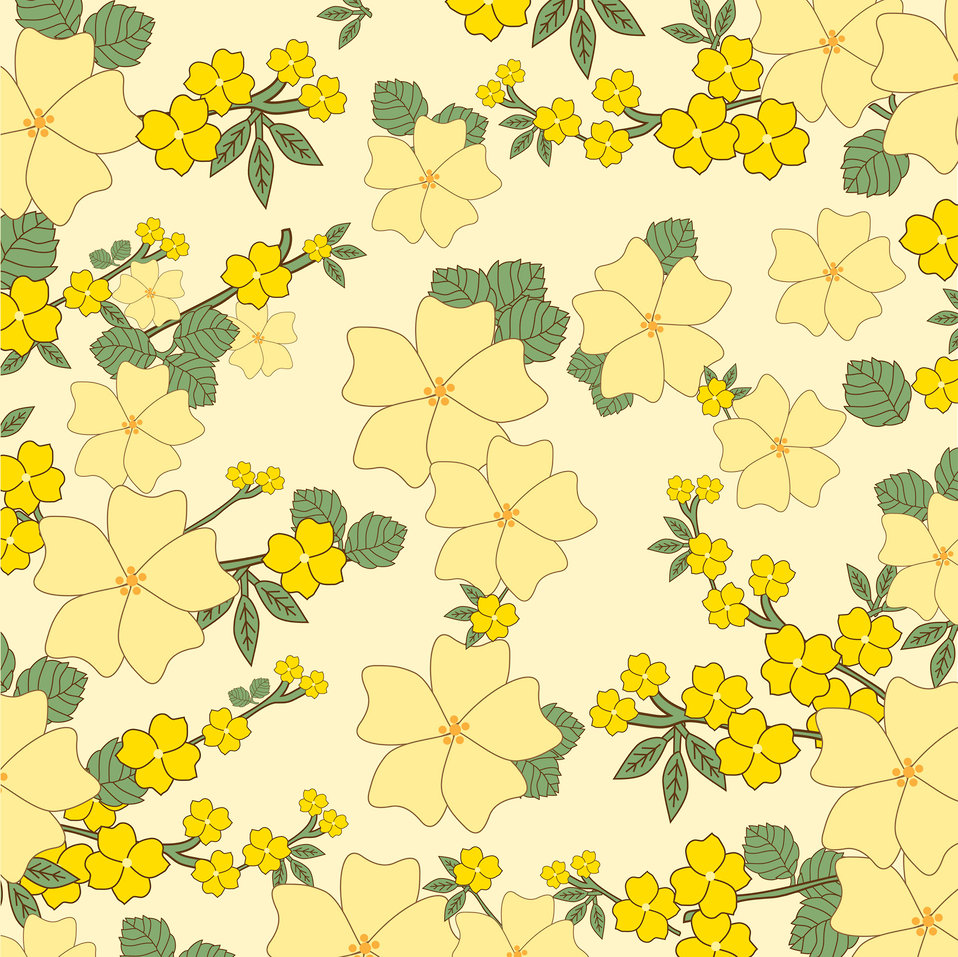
Flowers background yellow

Floral vintage yellow flowers wallpaper background for scrapbooking.